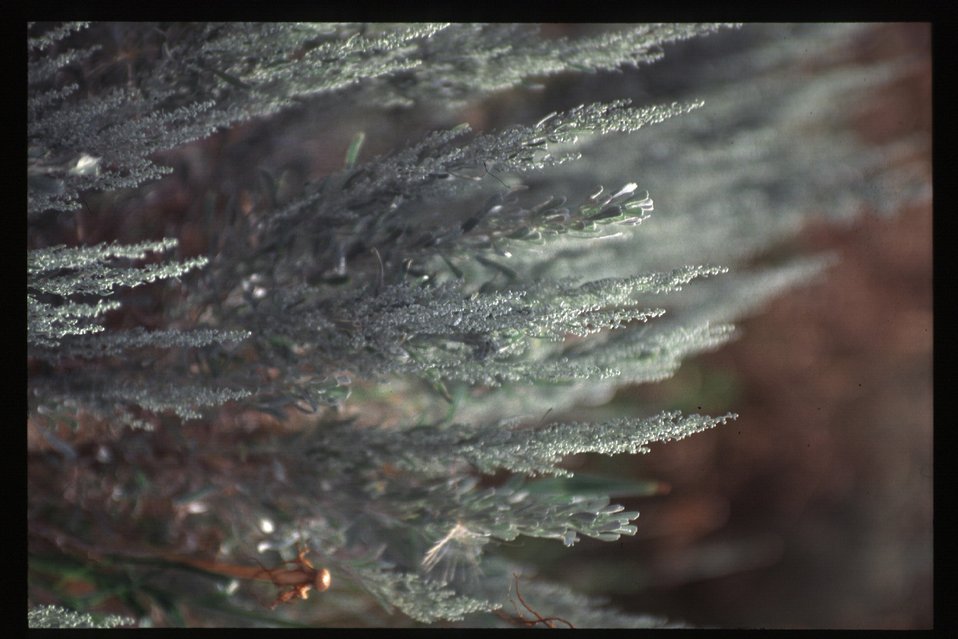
Scenics and Recreation South Snake River Cress Creek Trail USRD Upper Snake River District